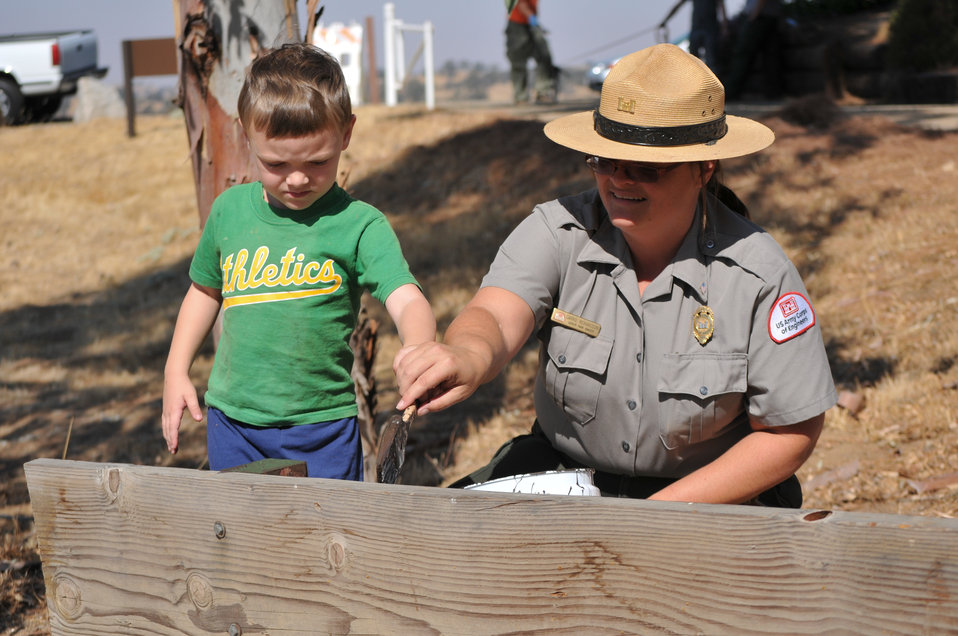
HENSLEY LAKE, Calif. (Sept. 25, 2010) – Eastman Lake senior park ranger Carrie Richardson helps a young volunteer paint a horseshoe-course backstop here Sept. 25, as part of the park’s National Public Lands Day observance. More than 110 volunteers helped Hensley staff remove litter, repair trail erosion, clean the swimming beach and paint and clean signs throughout the park. The Corps’ Eastman and Hensley Lakes are just miles apart, and take turns hosting National Public Lands Day events each year.